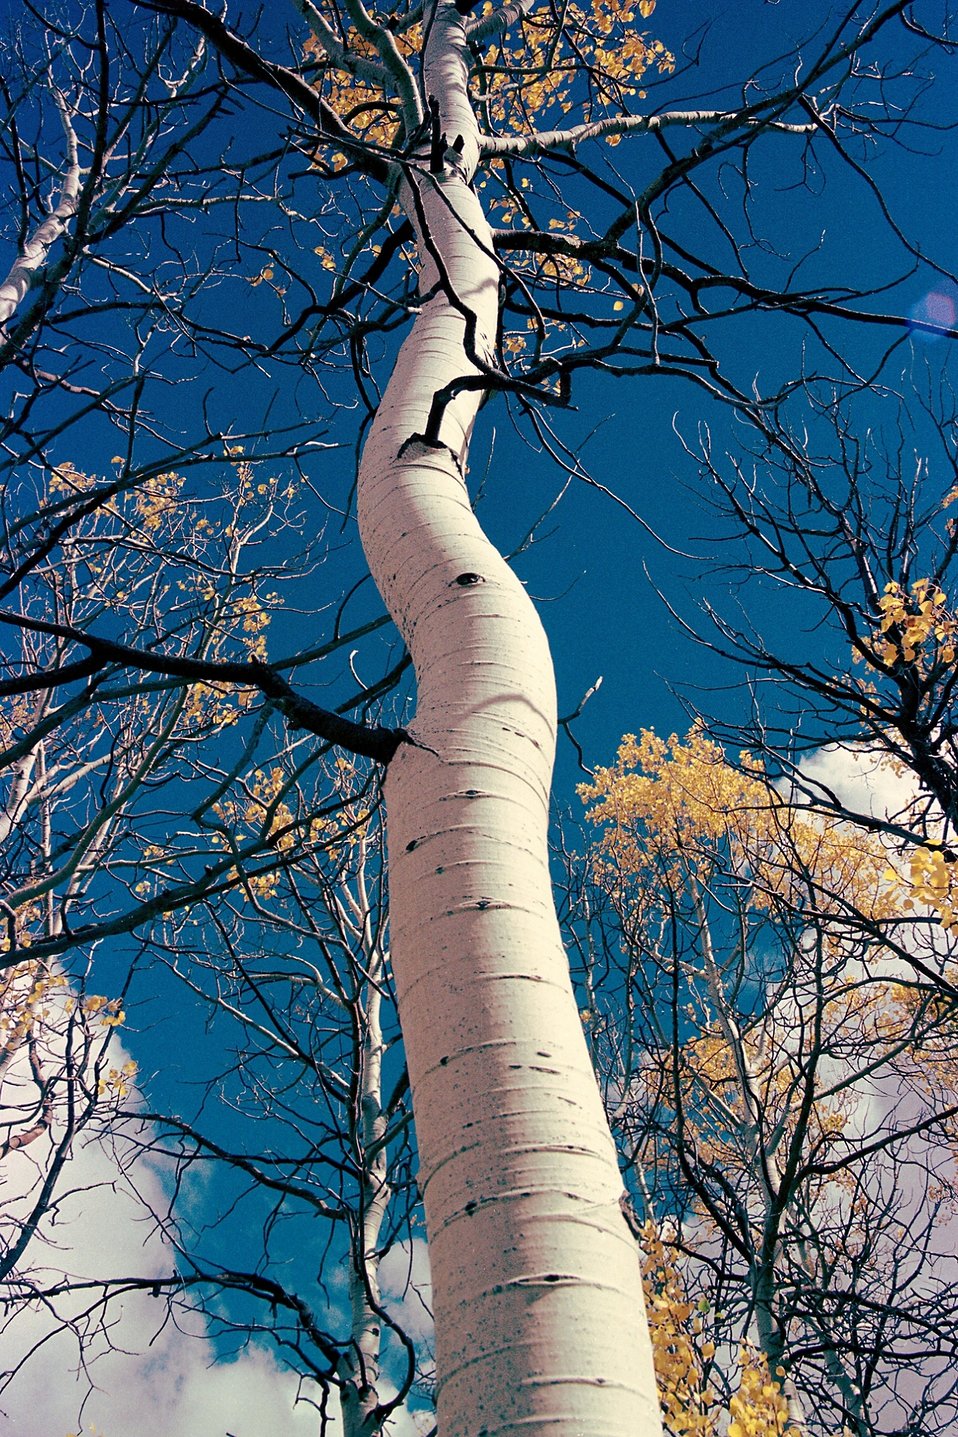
Aspen at Fish Lake, Steen's Mountain.